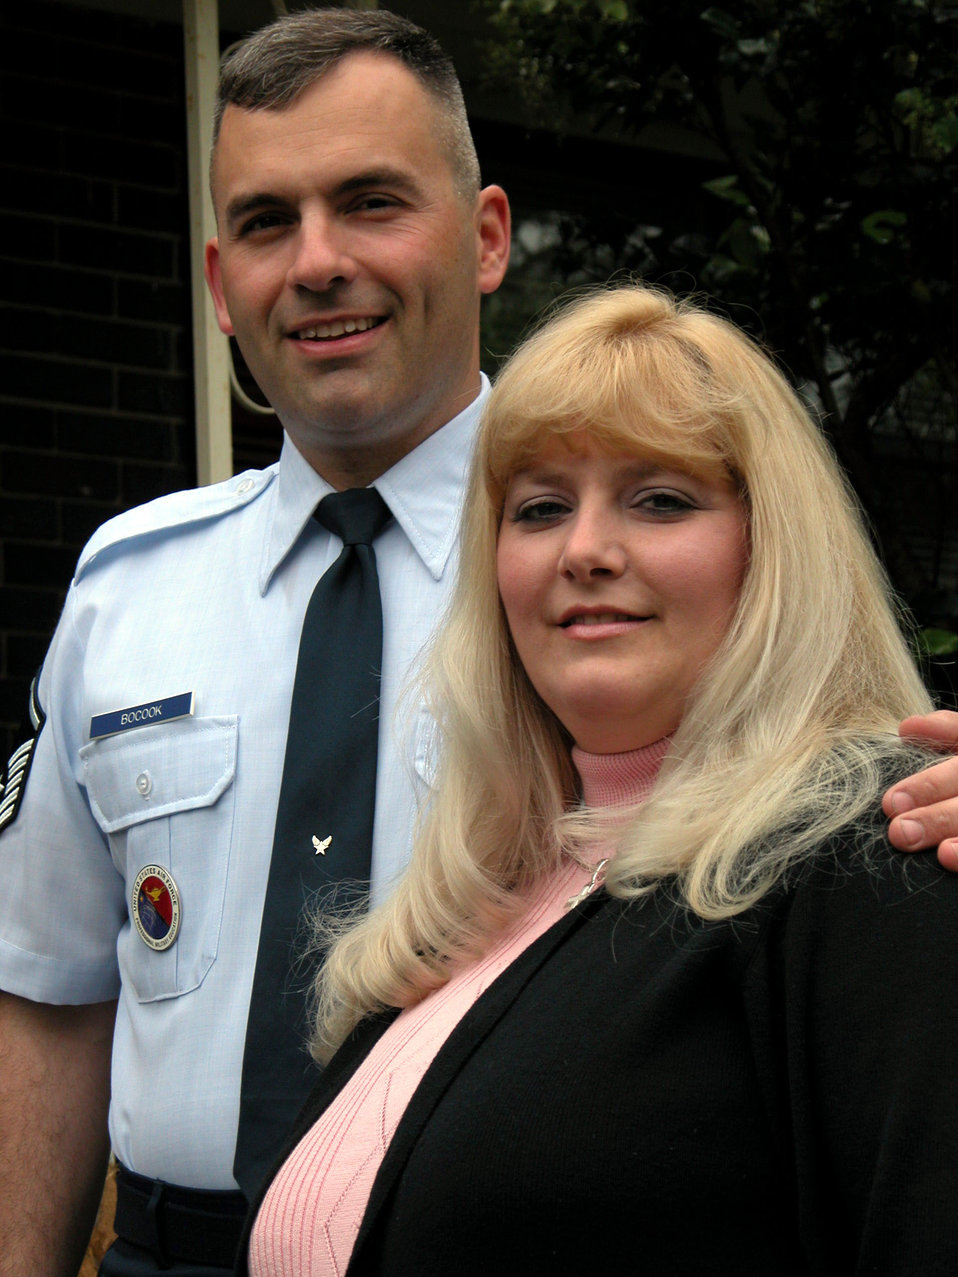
Spouse of the year 2003

ROBINS AIR FORCE BASE, Ga. (AFPN) -- Tammie Bocook stands with her husband of more than 16 years, Master Sgt. Ray Bocook. She was named the 2003 Joan Orr Air Force Spouse of the Year.